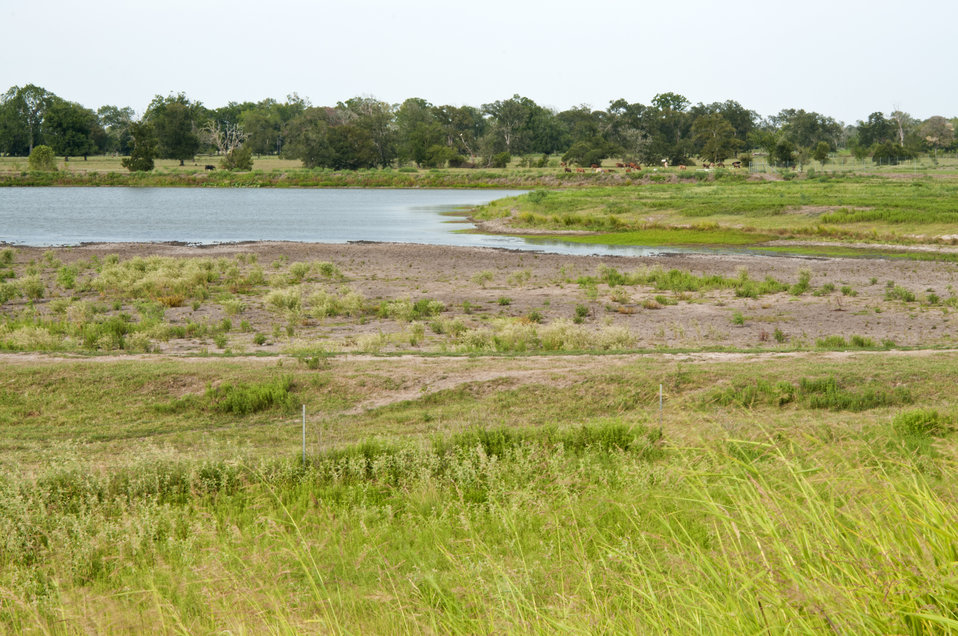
Water levels have dropped in pond on farm due to the drought in Texas on Aug. 20, 2013.